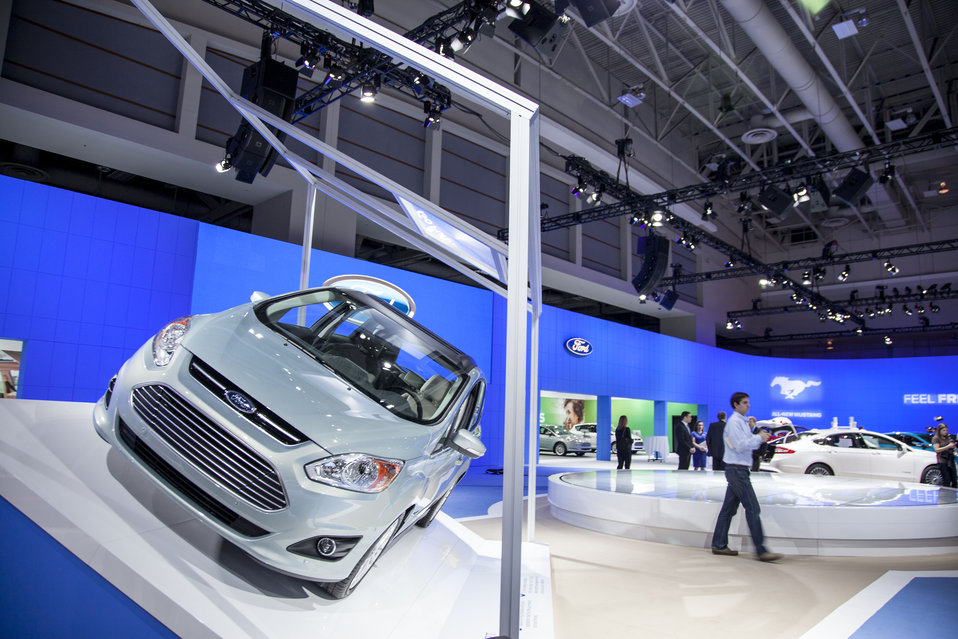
Ford displayed its solar-powered concept car -- the C-Max Solar Energi -- at the Washington Auto Show. The electric car is fitted with solar panels on the roof and includes a concentrating lens that charges the car’s battery, allowing it to run off just the energy of the sun.